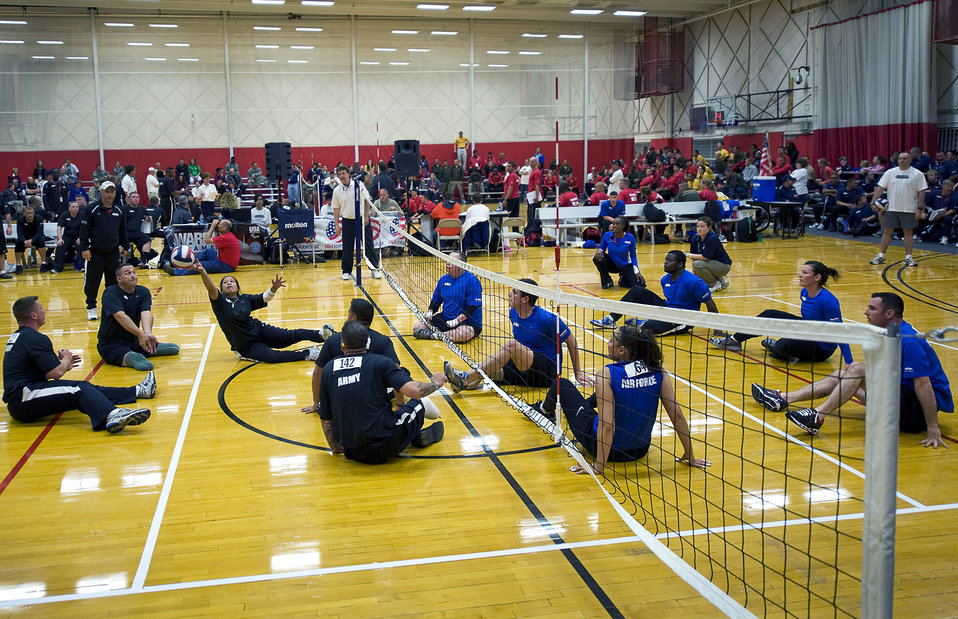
Warrior Games Volleyball

Army and Air Force members compete in a volleyball tournament at the Warrior Games May 11, 2011, at the Olympic Training Center, Colorado Springs, Colo. The Air Force went on to win the game proceeding to the next round.